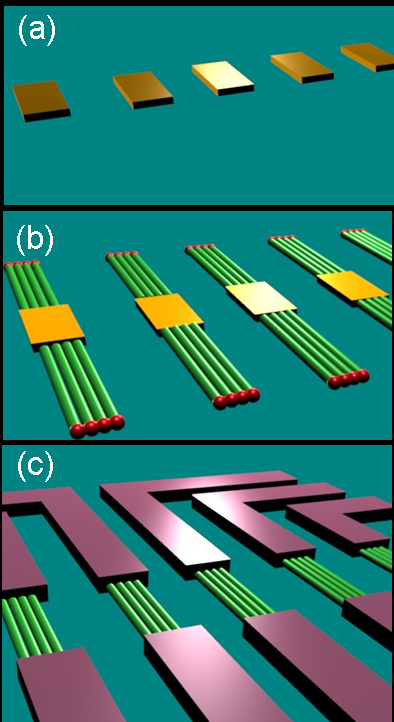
NIST Demos Industrial-Grade Nanowire Device Fabrication

Scanning electron microscope image shows electrodes connected to group of nanowires. Scale bar is five micrometers long.